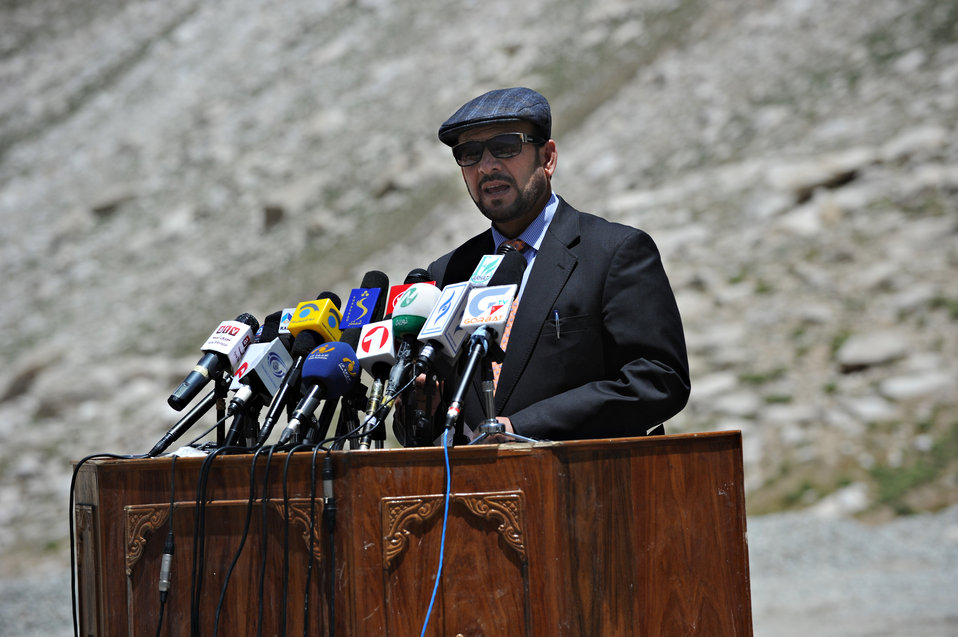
Parwan Governor Abdul Basir Salangi makes remarks during a ceremony to mark the beginning of renovations at the Salang Tunnel on the border of Parwan and Baghlan Provinces, Afghanistan, on Wednesday, June 15, 2011. (S.K.Vemmer/Department of State)